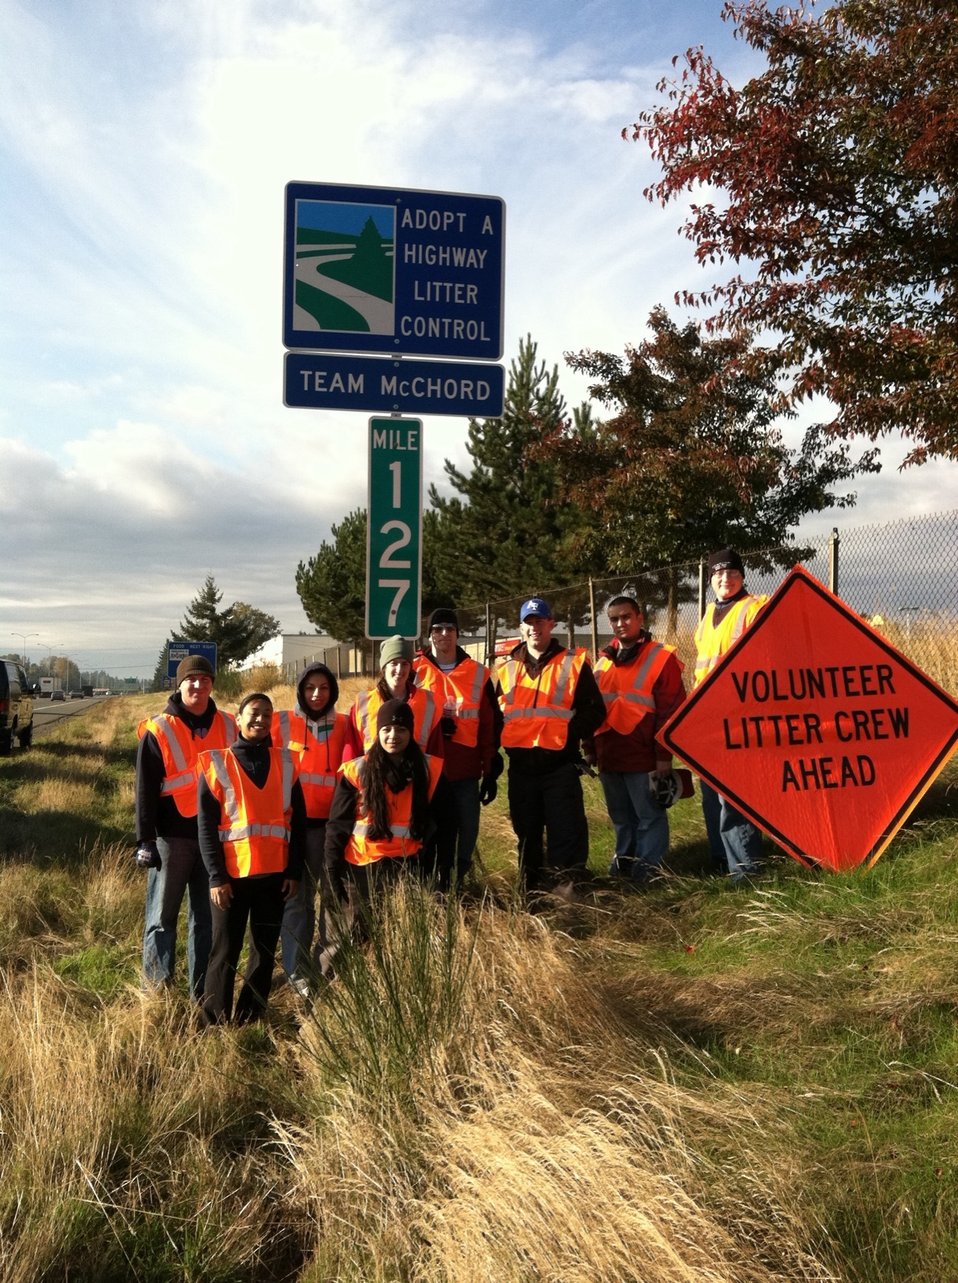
Adopt-A-Highway program

Ten volunteer company grade officers pose for a picture after picking up litter as part of the Adopt-A-Highway program Nov. 7, 2011, in Tacoma, Wash. Per their agreement with the Washington State Department of Transportation, the Company Grade Officer Council is required to pick up litter on an assigned stretch of highway four times a year for the next four years. This opportunity allows members of the council to consistently take care of the earth, serve the community and promote a good cause.